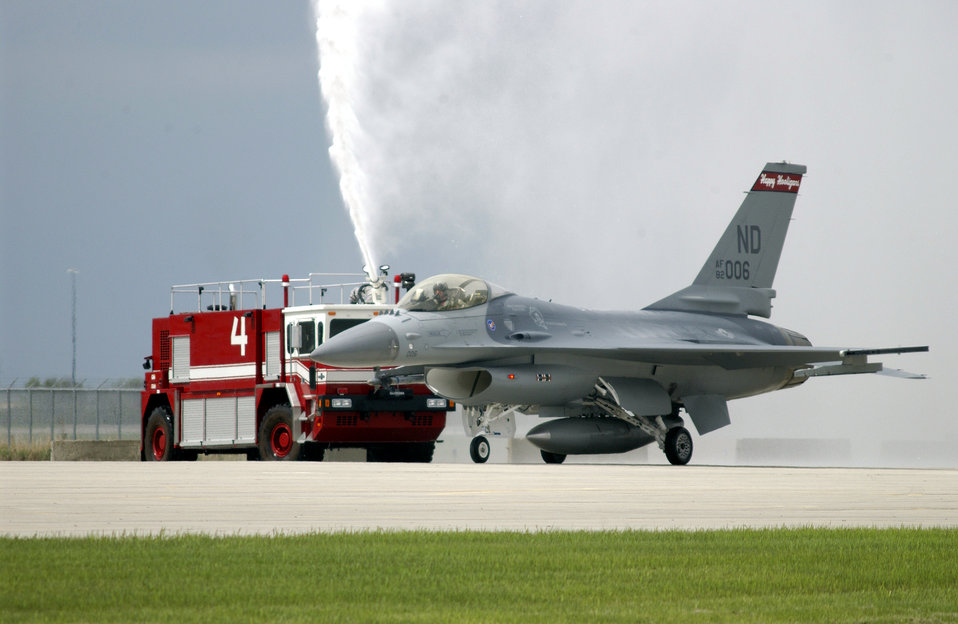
Safe Hooligans

FARGO, N.D. (AFPN) -- Lt. Col. Dana S. Mullenhour steers aircraft No. 82-1006, through a shower here May 14 to celebrate the completion of 60,000 accident-free flying hours in the F-16 Fighting Falcon for the 119th Fighter Wing. Overall, the North Dakota Air National Guard has amassed more than 132,400 flying hours without a Class A mishap.